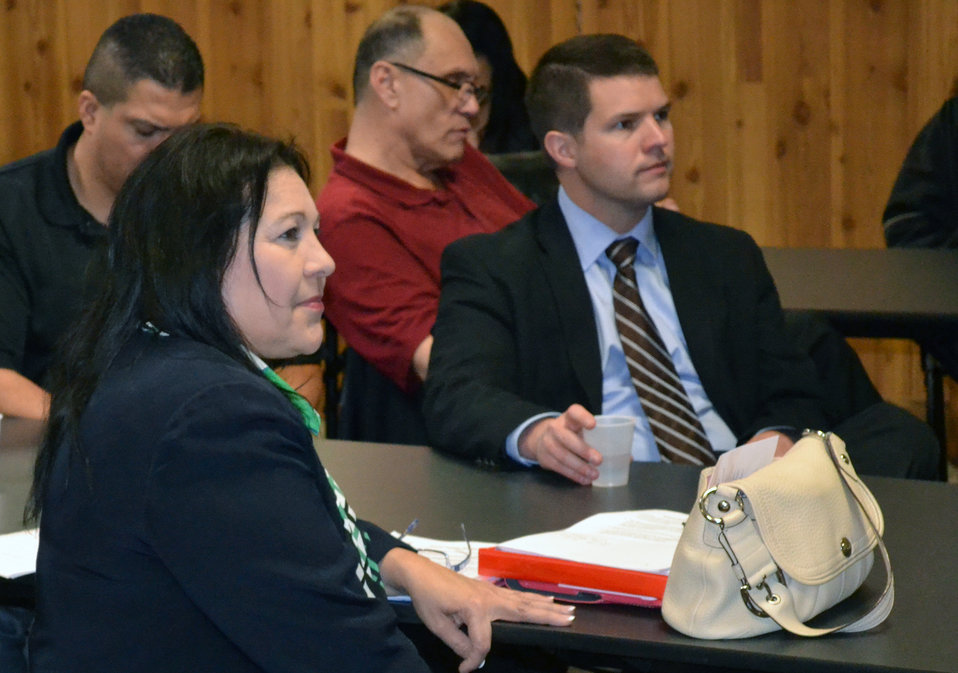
U.S. Department of Agriculture (USDA) Rural Development (RD) Rural Housing Service (RUS) Administrator Tammye Travino visits South Dakota to co-chair a StrikeForce meeting in Sissetion, SD. Travino attended a Housing Fair and visited homes and facilities financed by USDA's RD as part of National Homeownership Month on Monday, Jun. 3, 2013.